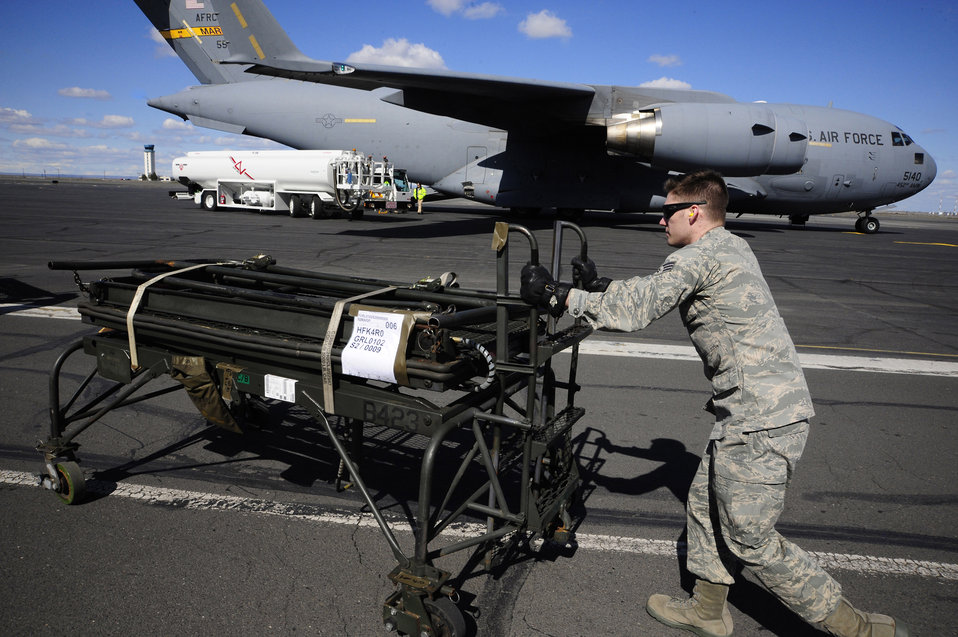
C-17 on a mission

Senior Airman Nathan Gaudette prepares to load flight equipment onto a C-17 Globemaster III March 22, 2011, at Grant County International Airport in Moses Lake, Wash., in preparation for a mission in support of Operation Odyssey Dawn. Airman Gaudette is assigned to the 92nd Logistics Readiness Squadron at Fairchild Air Force Base, Wash.